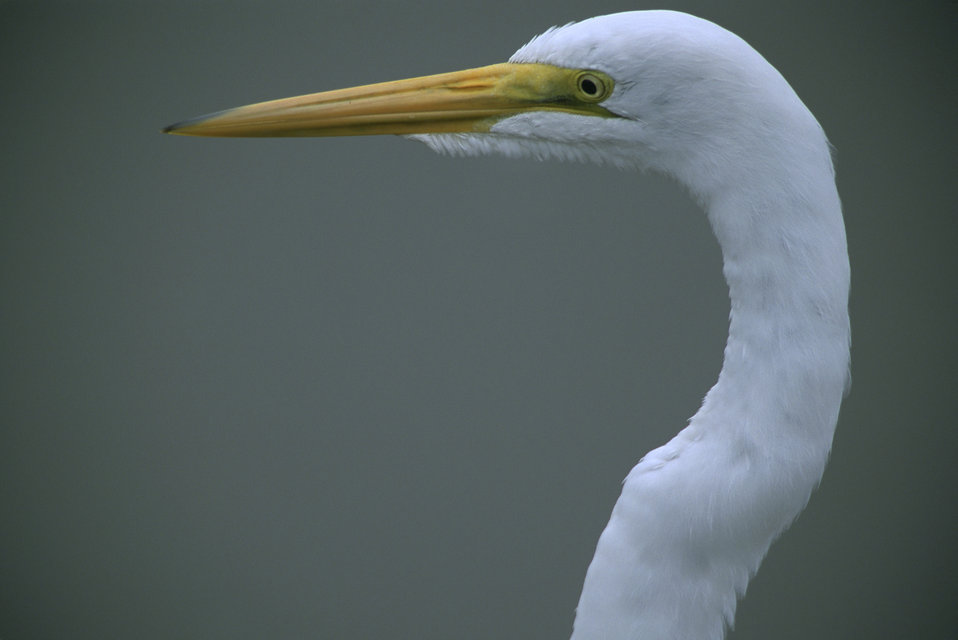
Great egret

Close-up of head and upper neck of great egret.